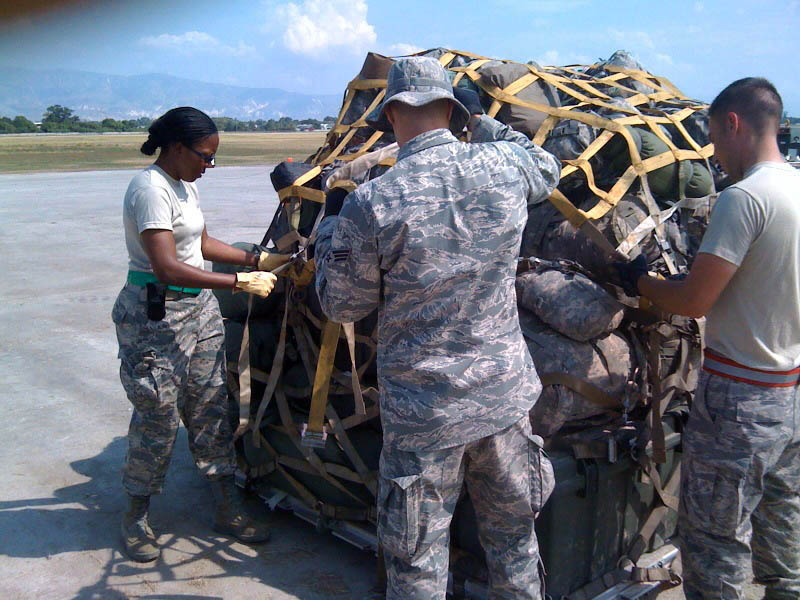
Humanitarian assistance

Master Sgt. Sebrena Flagg-Briggs helps tie-down cargo as part of her aerial port duties March 22, 2010 at Port-au-Prince International Airport, Haiti. Sergeant Flagg-Briggs is an air transportation specialist.